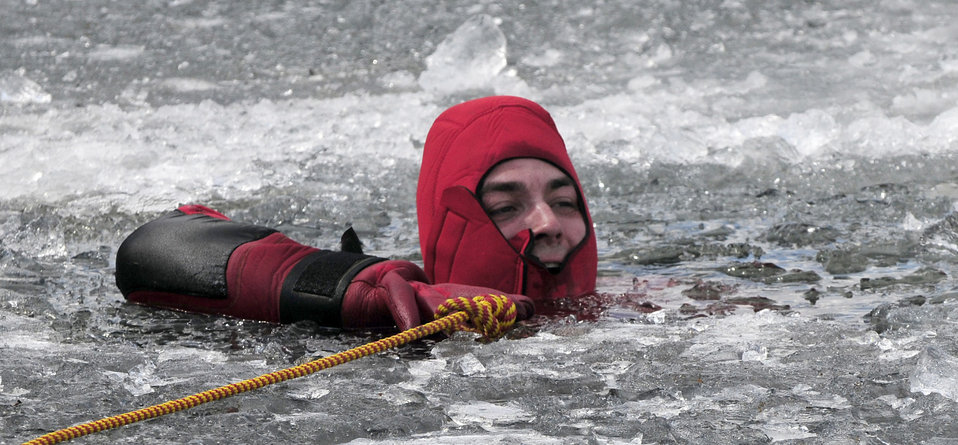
Firefighters train in icy lake

Airman 1st Class David Piasecki volunteers to be a victim during icy water rescue training May 6, 2011, at Eielson Air Force Base, Alaska. Airman Piasecki is assigned to the 354th Civil Engineer Squadron Fire Protection Flight.